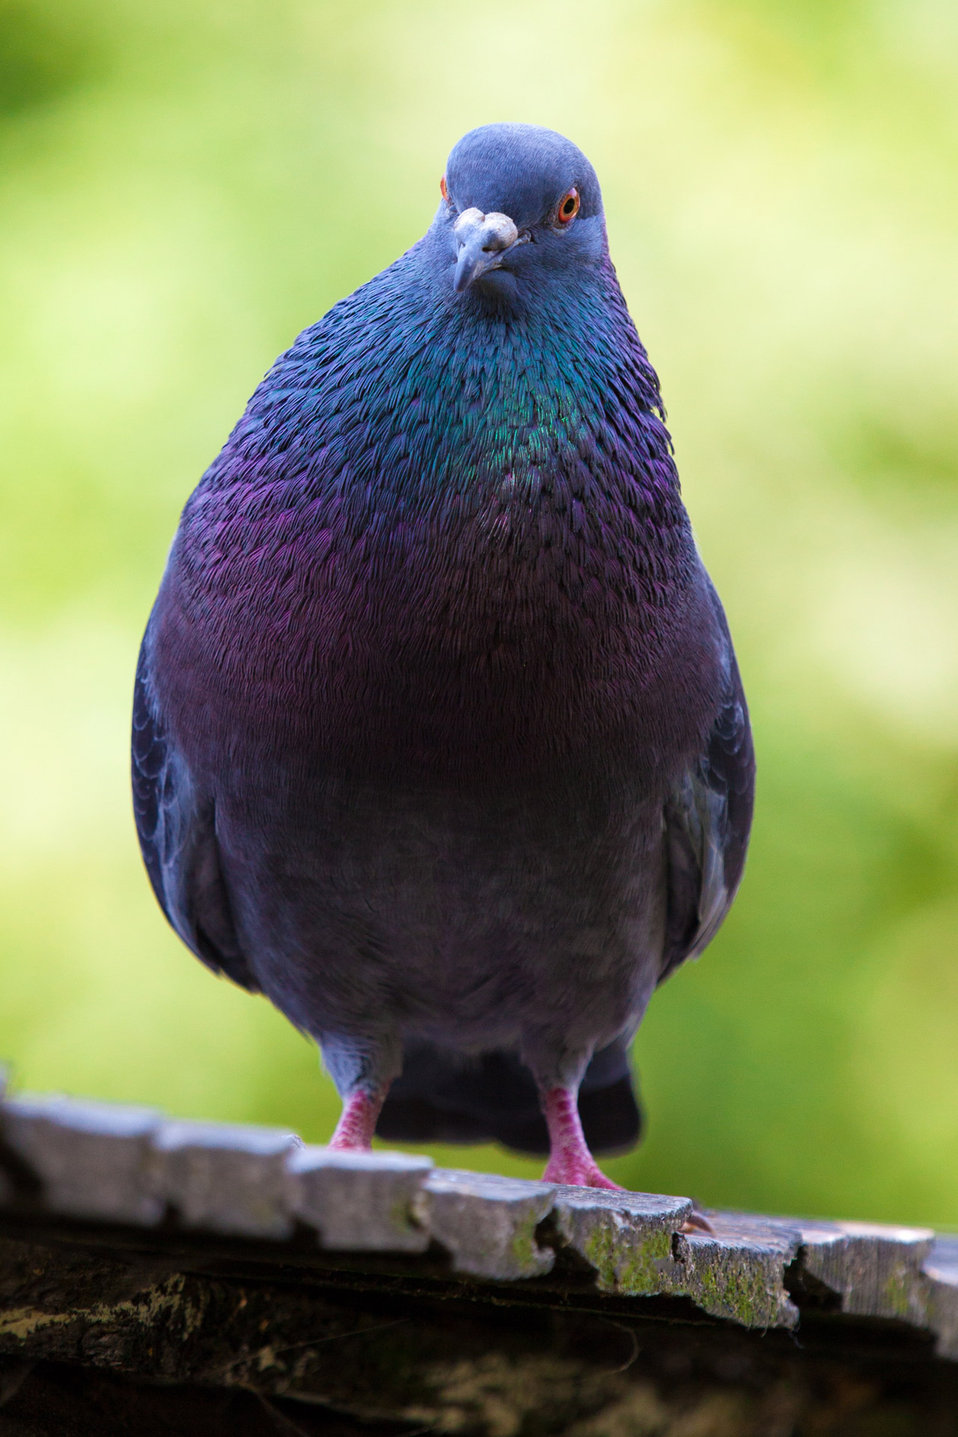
Male pigeon

Colorful male pigeon.